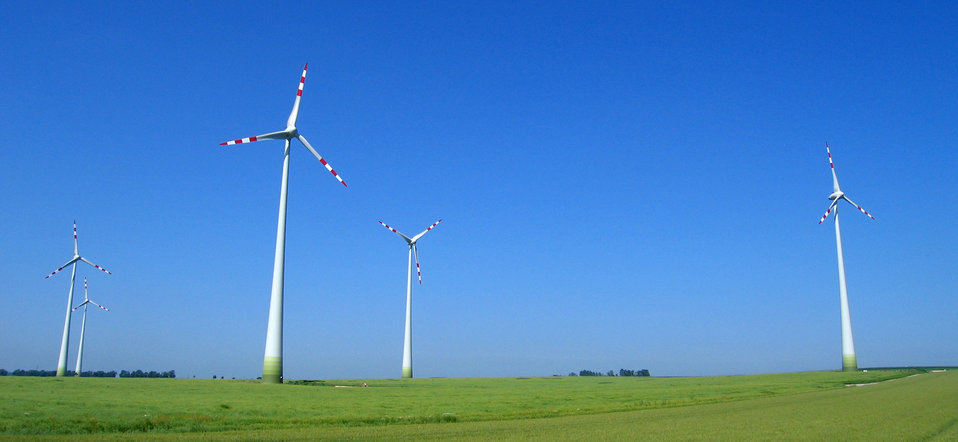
Argonne researchers are creating new models that can help predict in real time the amount of power generated by wind farms like the one shown here.